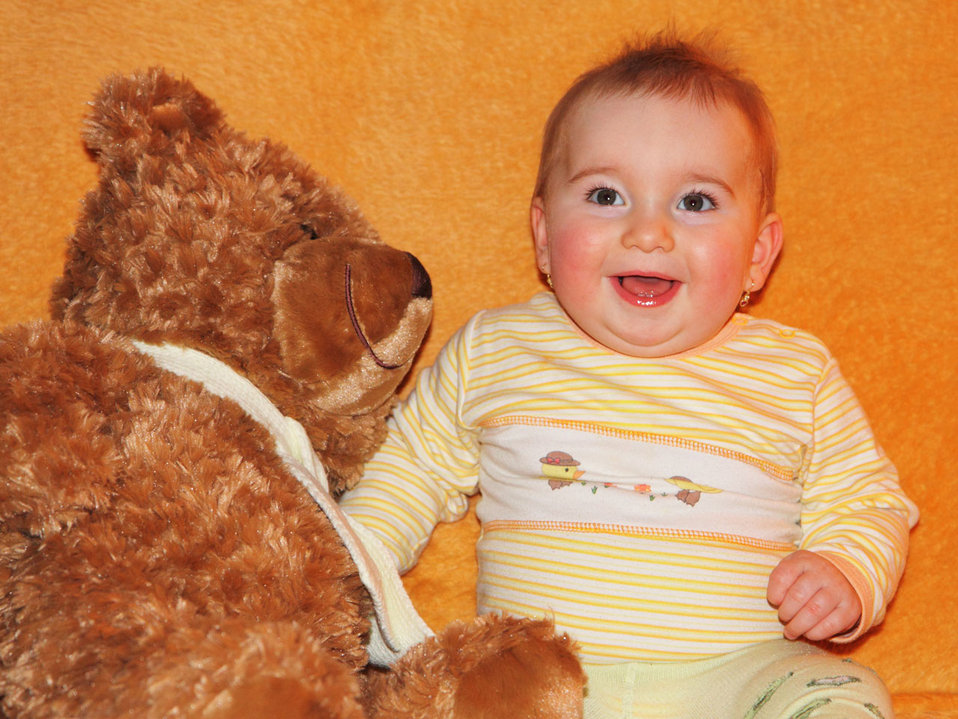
Smiling baby girl with a teddy bear.